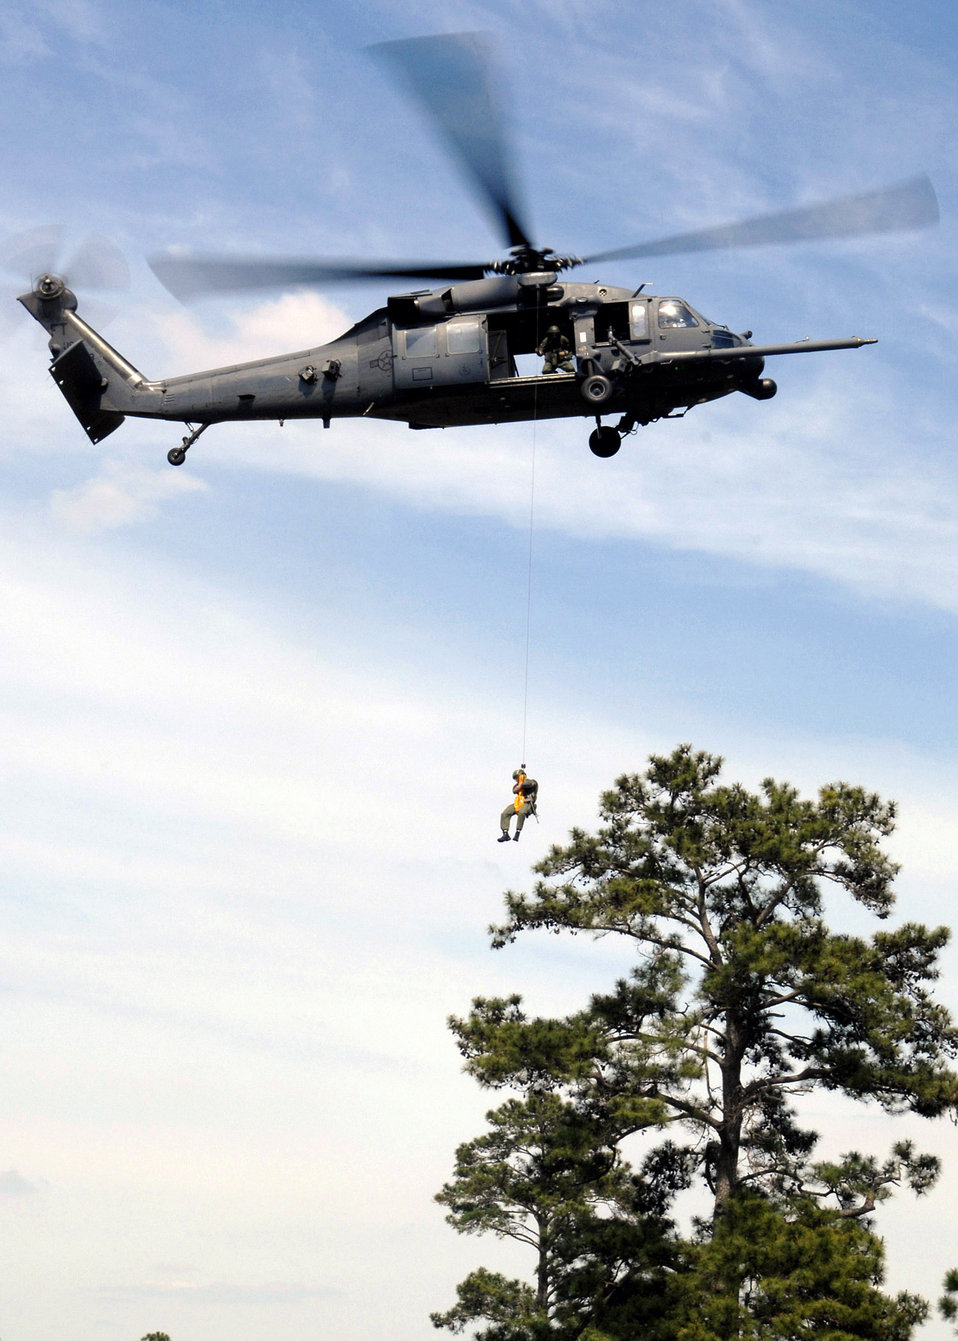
It's a long way down

As part of the Medal of Honor ceremony to honor Airman 1st Class William Pitsenbarger, Staff Sgt. Kyle Minshew rappelled from an HH-60G Pave Hawk helicopter April 18 at Moody Air Force Base, Ga. The pararescueman was illustrating Airman Pitsenbarger's experiences.